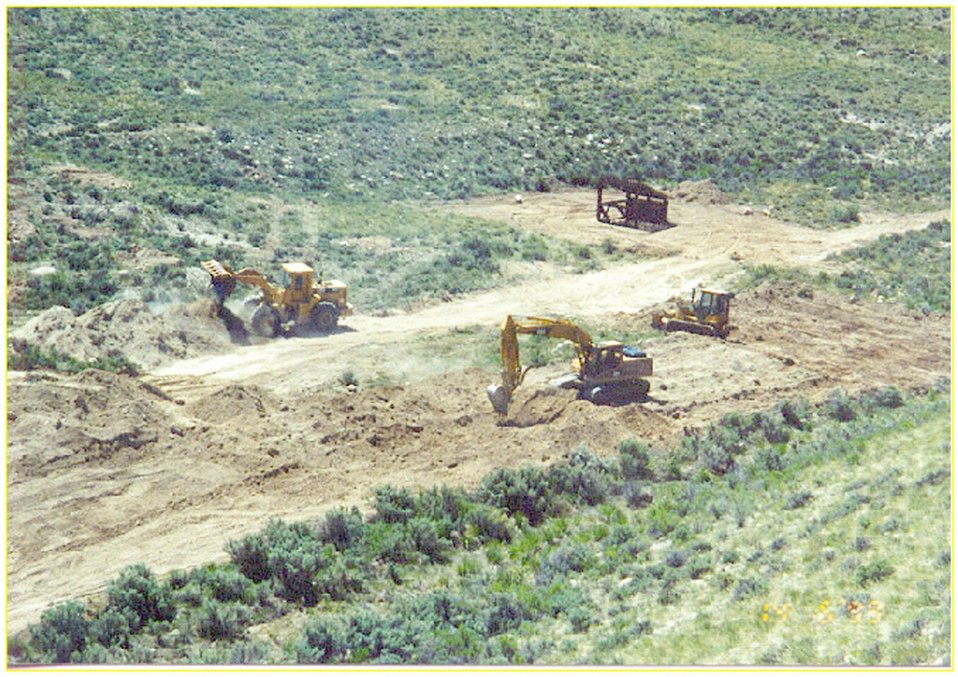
Removal of heavy metal contamination at North Creek Southeastern Idaho Idaho Falls Field Office USRD